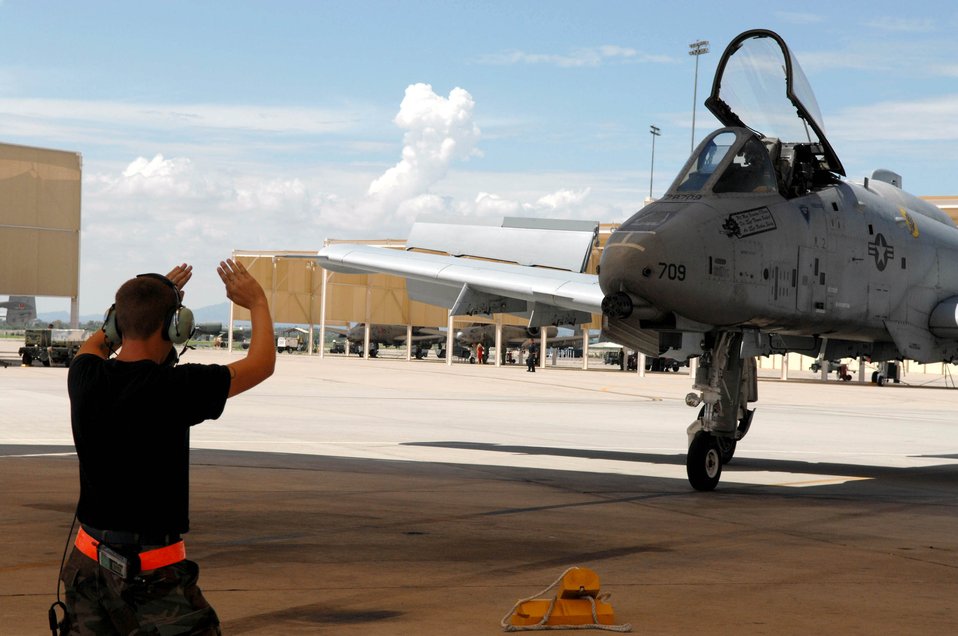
First class qualification

Airman 1st Class Peter Strom marshals an A-10 Thunderbolt II piloted by 2nd Lt. Robert Arena who just completed the first A-10C pilot initial qualification course Aug. 2 at Davis-Monthan Air Force Base, Ariz. During the seven-month-long course, the training focused on the new A-10C platform which replaced the A-10A. The pilots also learned the basics of being attack pilot wingmen, which included flying in formation to provide mutual support, communicate with radios and kill the assigned target on the first attempt. Airman Strom is assigned to the 357th Aircraft Maintenance Unit. Lieutenant Arena is an A-10 pilot with the 357th Fighter Squadron.